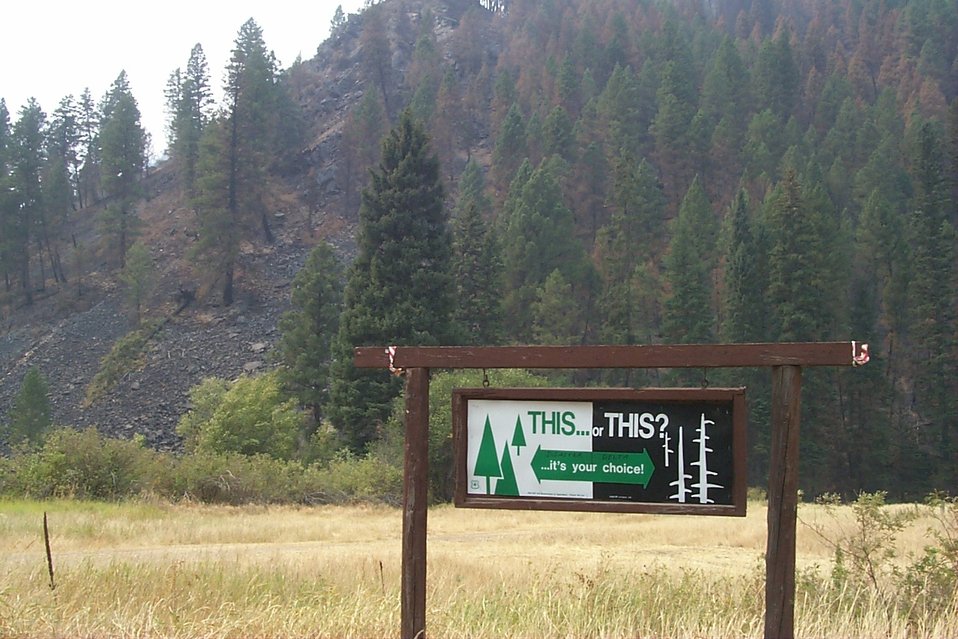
Warning Sign Clearwater Fire Salmon Field Office USRD Upper Snake River District